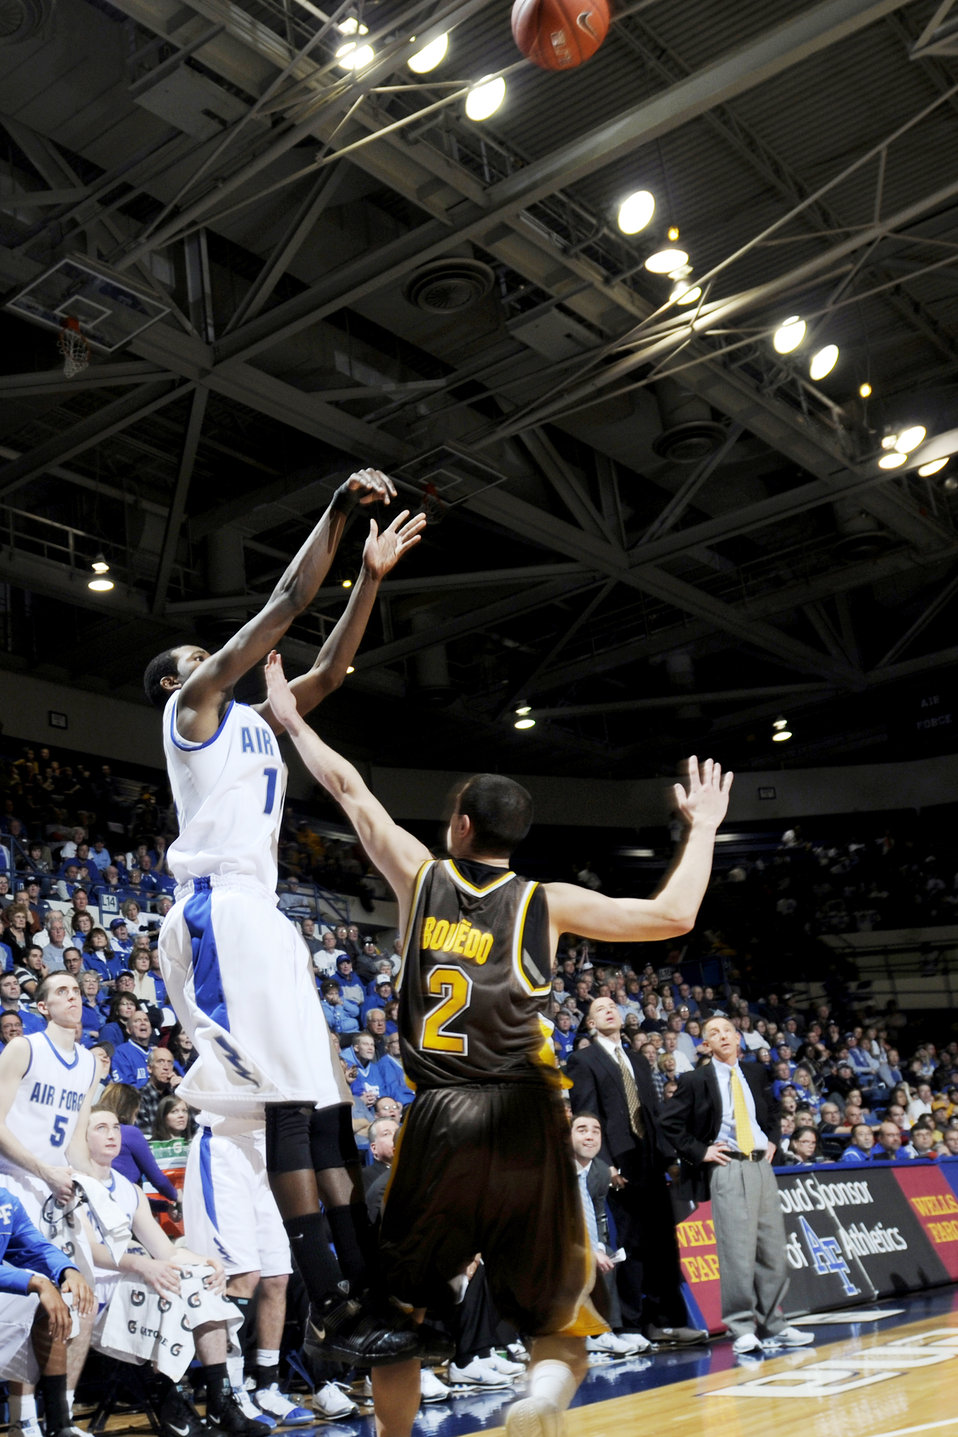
Falcons break conference streak

Falcon freshman guard Michael Lyons makes a three-point shot as opponent Arthur Bouedo tries to block during the game against Wyoming at the U.S. Air Force Academy's Clune Arena in Colorado Jan. 30, 2010. The Falcons won 70-63. The win broke a 22-game conference losing streak; their first win in the Mountain West Conference since 2008.